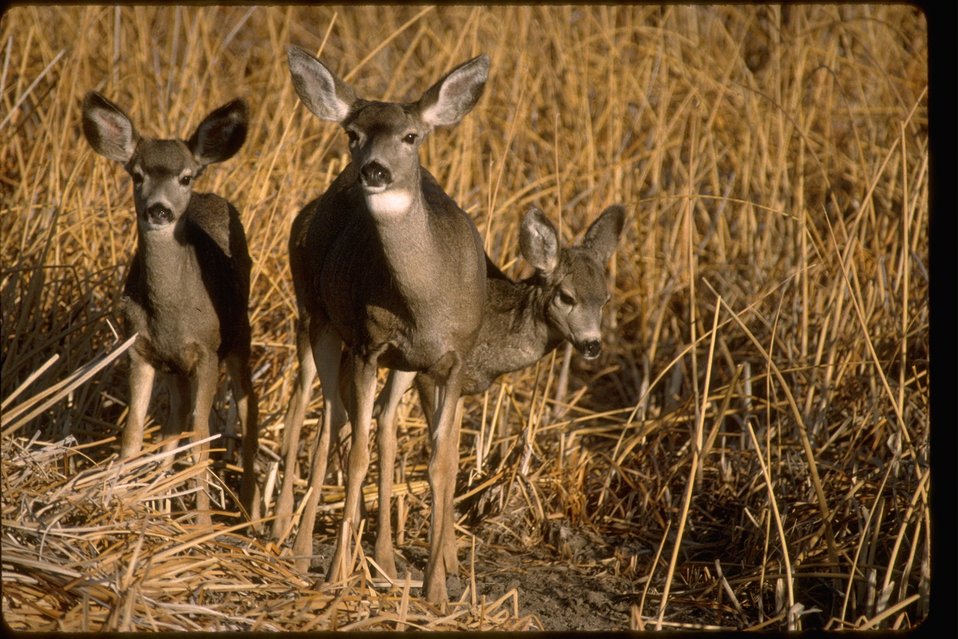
Mule Deer near Burns, Oregon.